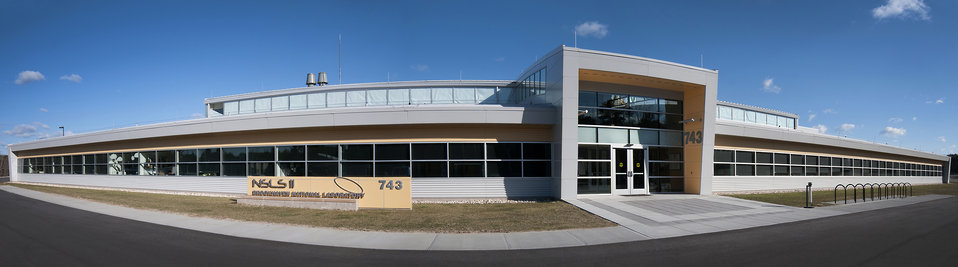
National Synchrotron Light Source II will be a new state-of-the-art, medium-energy electron storage ring (3 billion electron-volts) designed to deliver world-leading intensity and brightness, and will produce x-rays more than 10,000 times brighter than the current NSLS.

The superlative character and combination of capabilities will have broad impact on a wide range of disciplines and scientific initiatives, including the National Institutes of Health's structural genomics initiative, DOE's Genomics:GTL initiative, and the federal nanoscience initiative.The new facility scheduled to begin operating in 2015.